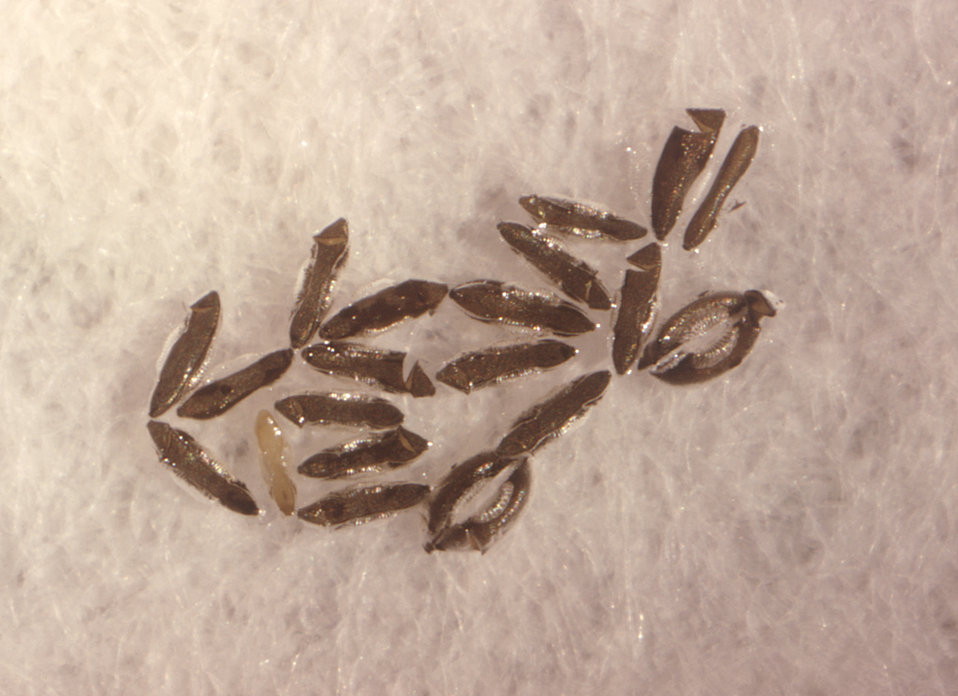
This photograph depicts twenty-two eggs, which had been deposited by a female Anopheles stephensi mosquito, a known vector for the disease malaria.